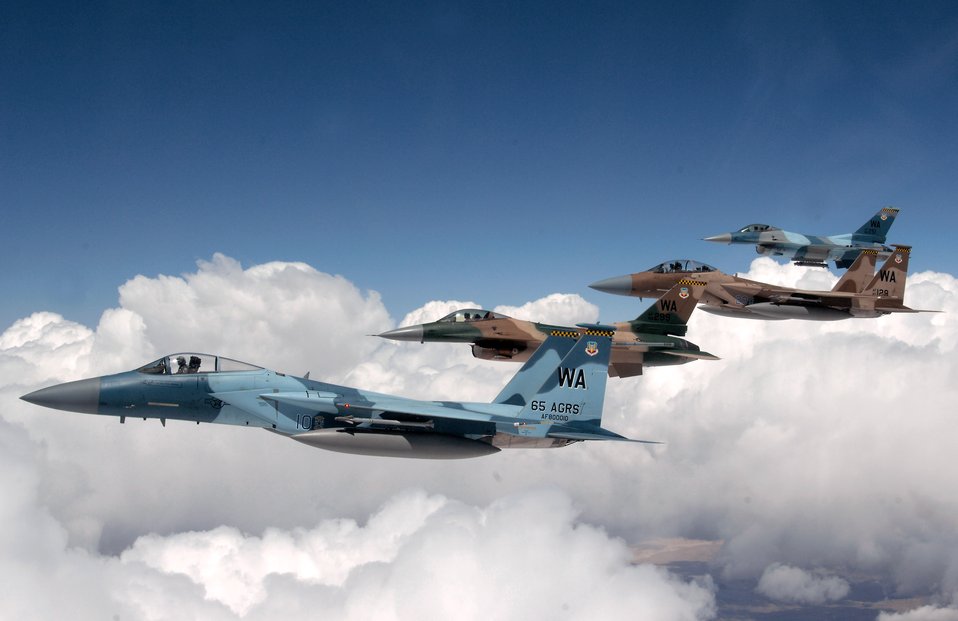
Aggressors provide challenging, realistic threat replication

A flight of Aggressor F-15 Eagles and F-16 Fighting Falcons fly in formation June 5 over the Nevada Test and Training Range. The jets are assigned to the 64th and 65th Aggressor squadrons at Nellis Air Force Base, Nev. The Aggressor mission is to prepare the combat air forces, joint and allied aircrews for tomorrow's victories with challenging and realistic threat replication, training, academics and feedback. Aggressor pilots simulate foreign-made combat aircraft and use actual tactics of air forces worldwide.